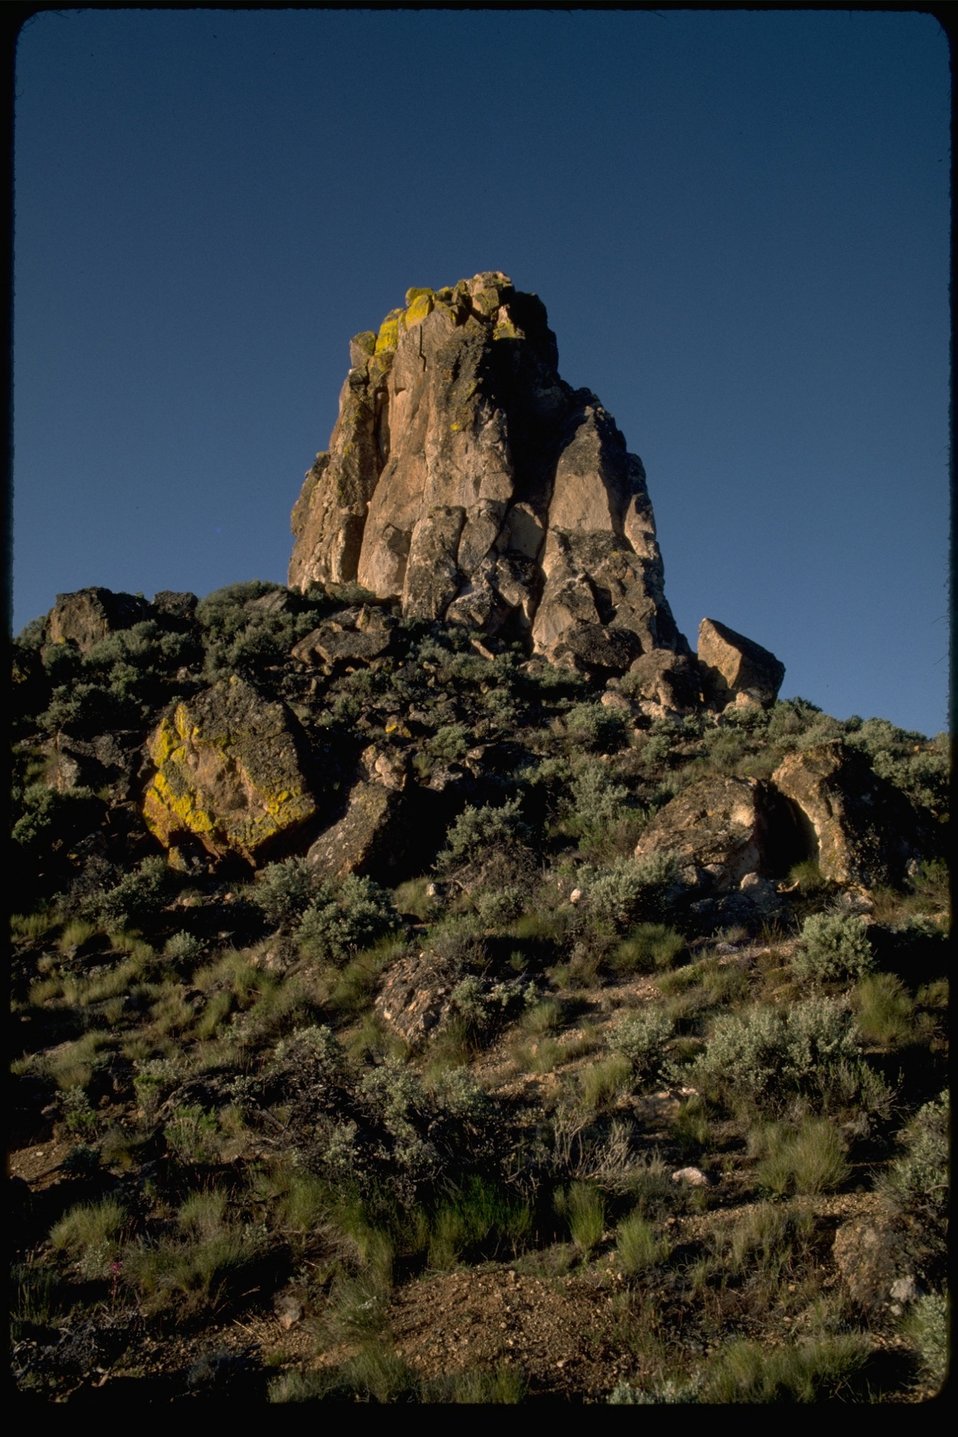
Large rocky peak in the Spalding Wilderness Study Area. OR 1-139